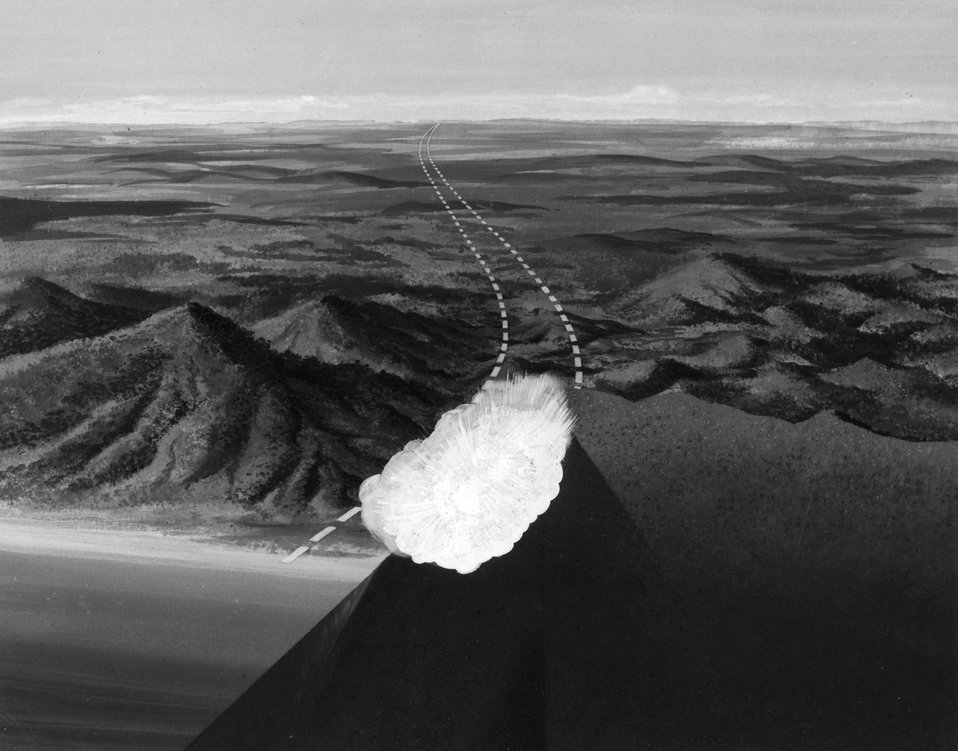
Artist's concept of a nuclear row charge explosion at a sea-level canal site. The use of row charge explosions to create ditch-like craters in the construction of sea-level canals is being studied in the Atomic Energy Commission's Ploughshare program for the peaceful uses of nuclear explosives. c. 1966